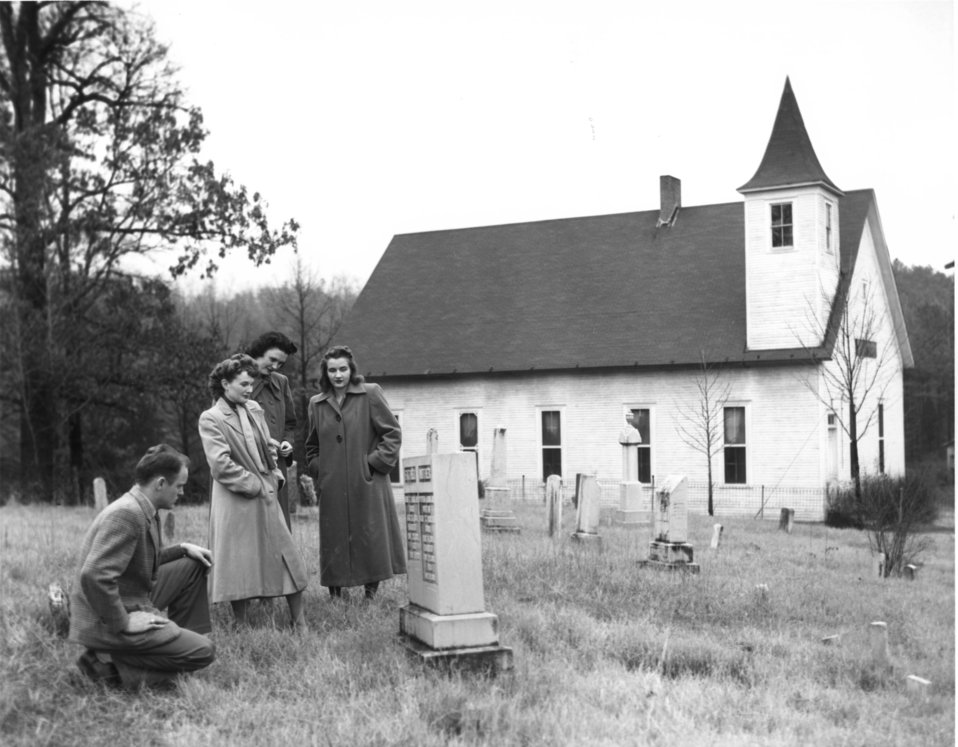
Early settlers at Oak Ridge